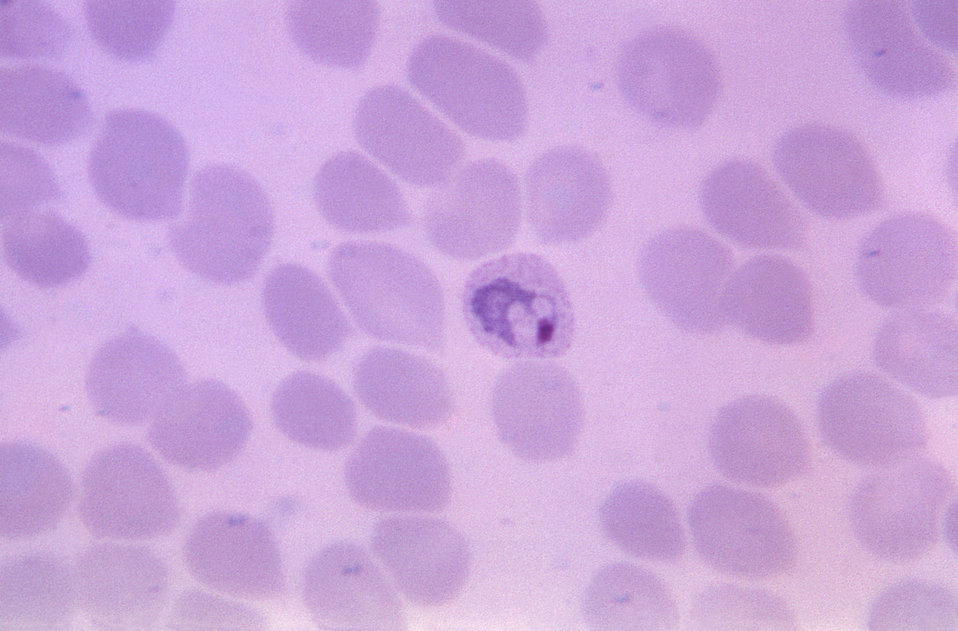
This thin film blood smear micrograph depicts a growing P. vivax trophozoite; Magnified 1125X.